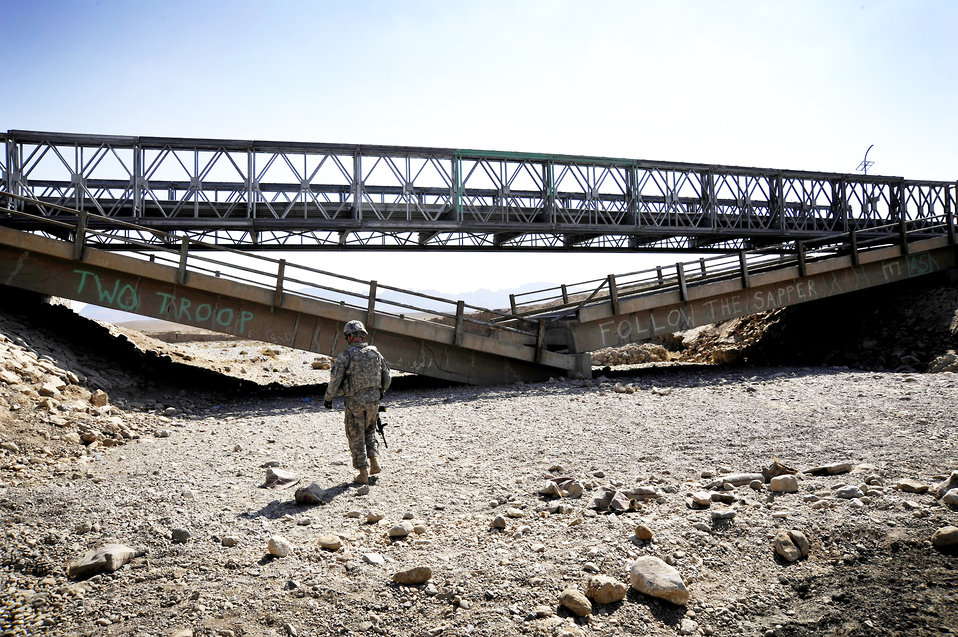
Air Force engineers help keep Afghan roads safe for travel

Capt. Rick Vermillion approaches a damaged bridge which he will inspect for improvised explosives devices or any traces of tampering Oct. 23, 2009, in Zabul Province, Afghanistan. The inspections provide safety to the people of Zabul as well as coalition forces while traveling. Captain Vermillion is an engineer assigned to Provincial Reconstruction Team Zabul.